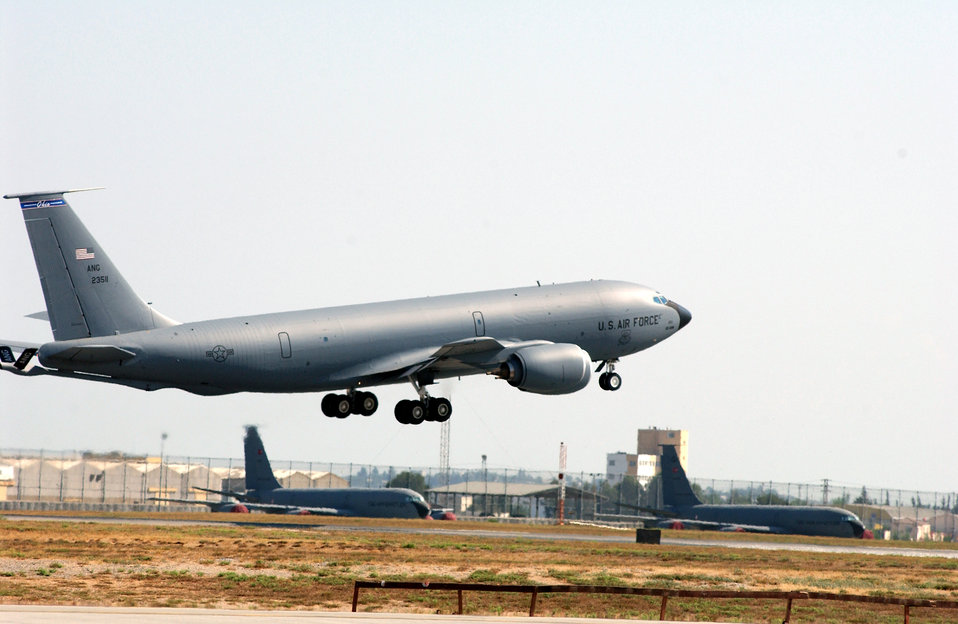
Tanker time

INCIRLIK AIR BASE, Turkey -- A KC-135 Stratotanker takes off from here. Six additional Stratotankers arrived here Nov. 1 and 2 to support operations Enduring Freedom and Iraqi Freedom. The aircraft and their crews are from Grand Forks Air Force Base, N.D.; Robins AFB, Ga.; and McConnell AFB, Kan. They increase the 385th Air Expeditionary Group here by 75 people including operations, maintenance and medical airmen.